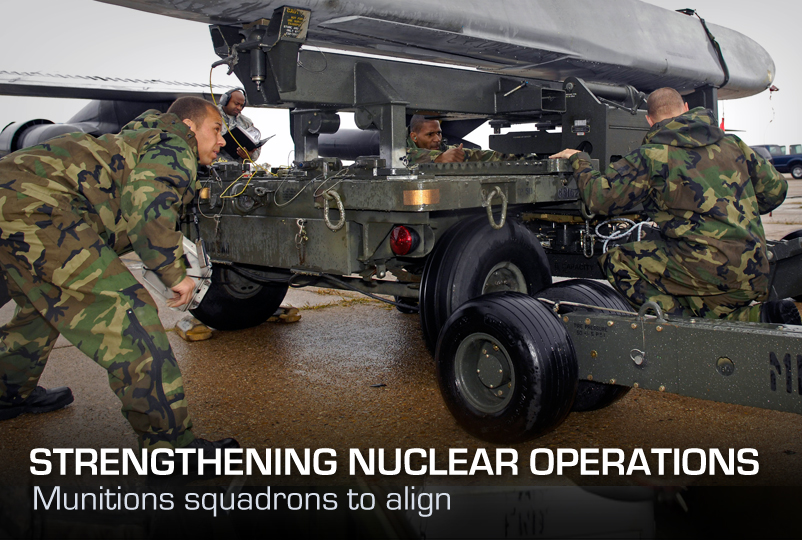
Strengthening Nuclear Operations